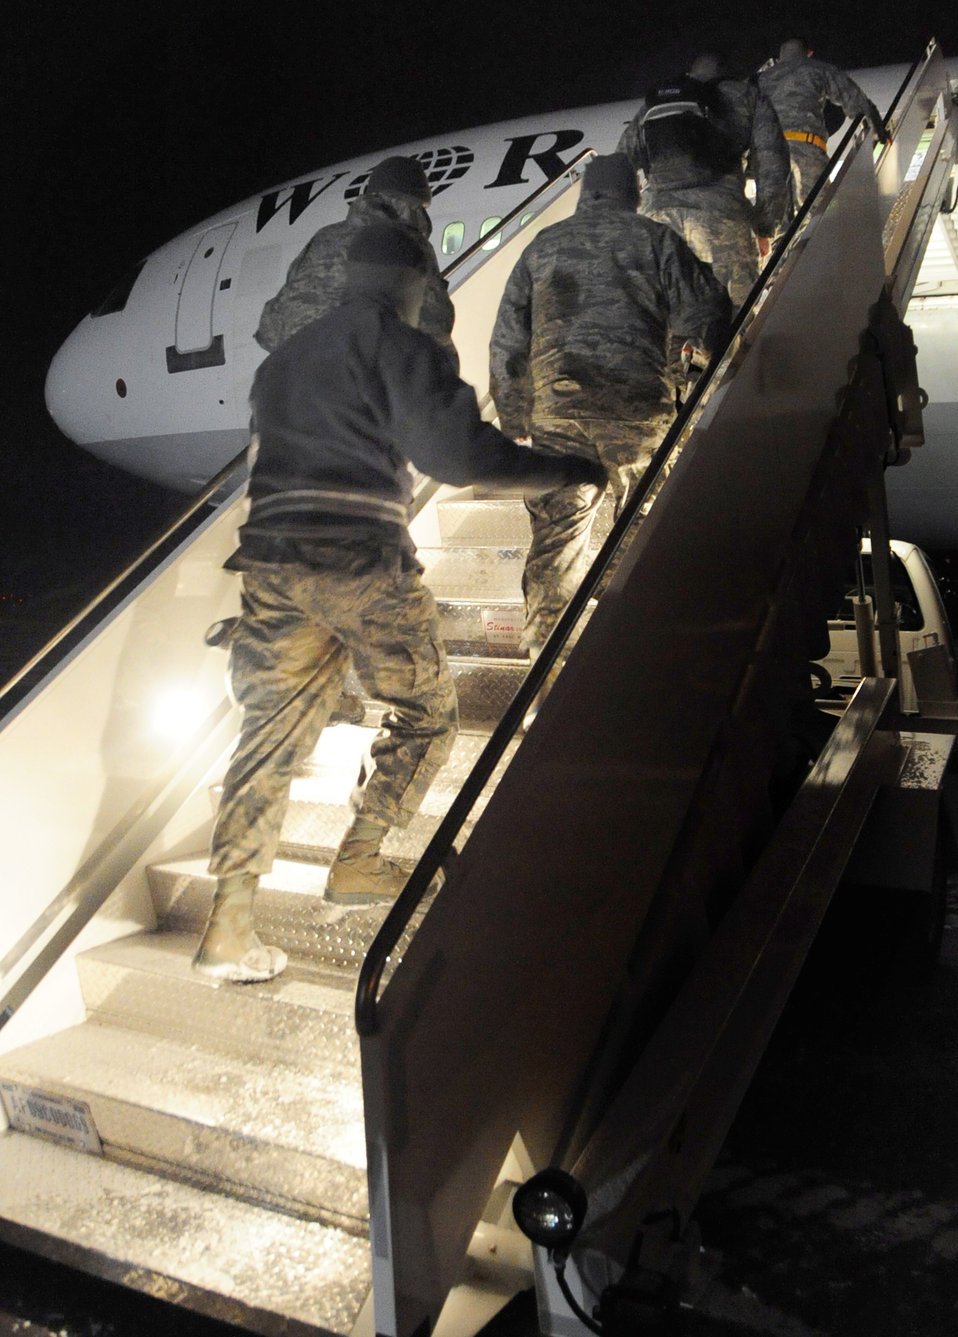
Stairway to deployment

Airmen from Ellsworth Air Force Base, S.D., climb aboard their plane as they prepare to depart Jan. 15, 2011, for Southwest Asia. Approximately 300 Airmen deployed in support of overseas contingency operations.